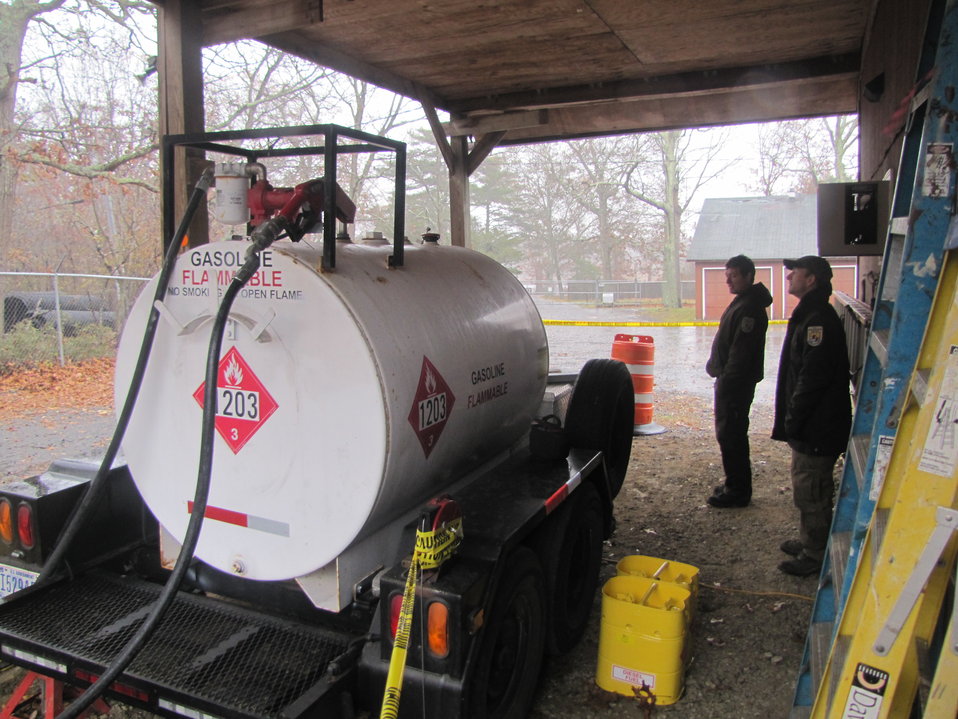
Refueling after the storm (NY)

480 gallons of fuel were provided by the Southeast Region to assist the Long Island National Wildlife Refuge complex to fufill repair and recovery duties after Hurricane Sandy. Photo by Todd Weston. USFWS.